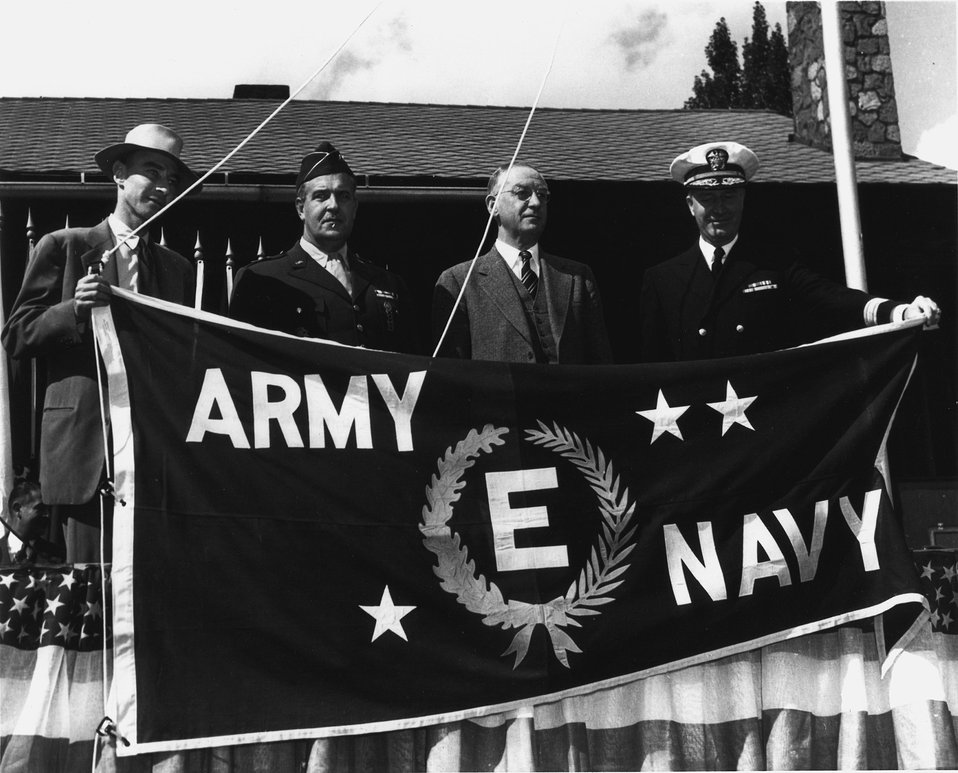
Oppenheimer receives the Army Navy excellence award. c. 1945